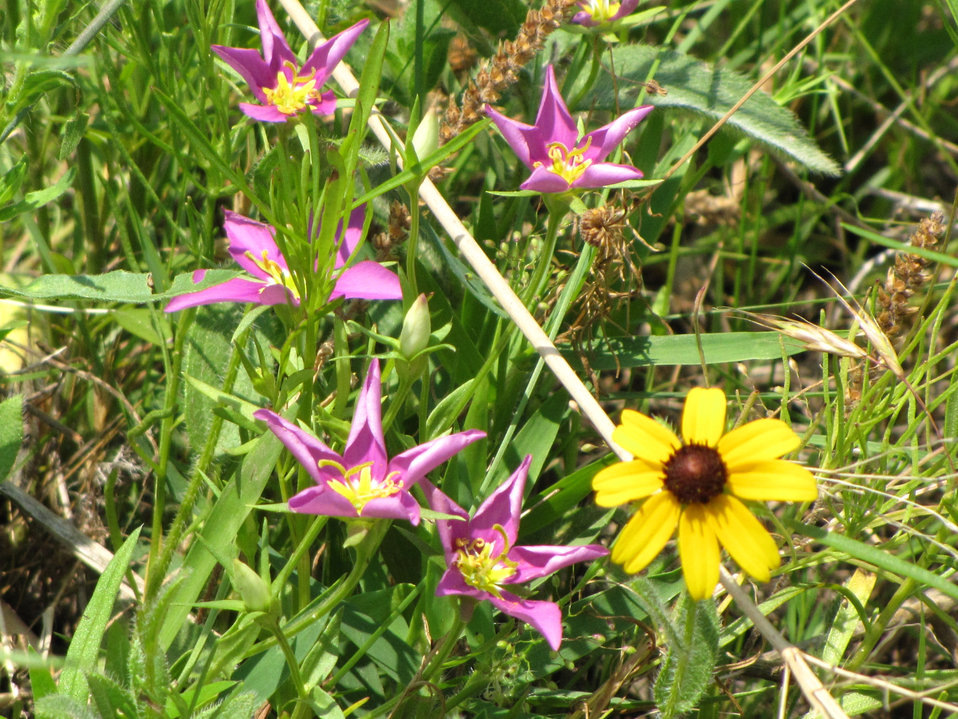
Prairie rose gentian

Sabatia campestris Nutt., coneflower, at Wichita Mountains Wildlife Refuge.